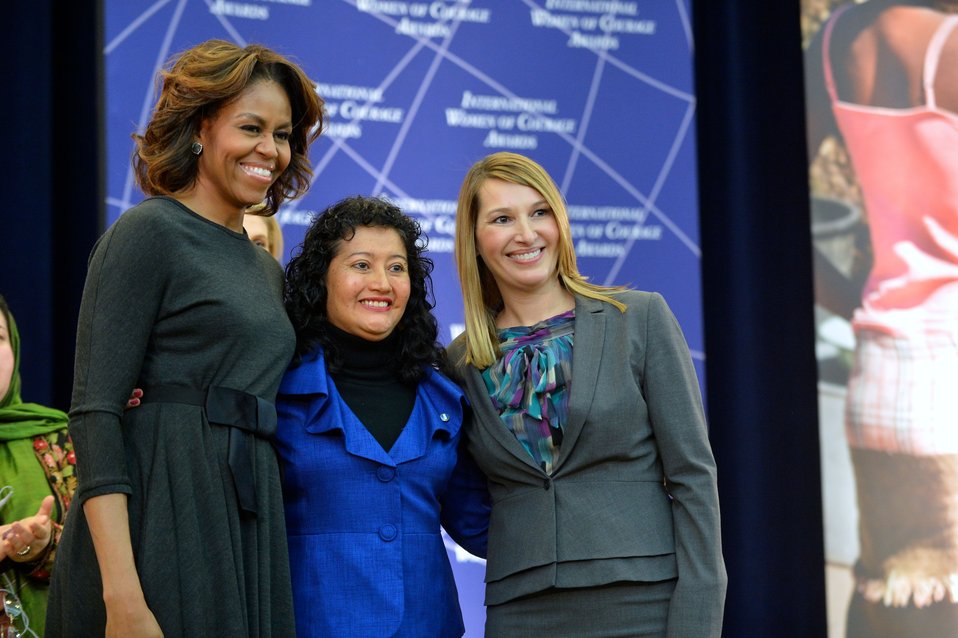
First Lady Michelle Obama and Deputy Secretary Higginbottom With 2014 IWOC Awardee Dr. Iris Yassmin Barrios Aguilar of Guatemala

First Lady Michelle Obama and Deputy Secretary Heather Higginbottom pose for a photo with 2014 International Women of Courage Awardee Dr. Iris Yassmin Barrios Aguilar, a Tribunal President of the High Risk Court in Guatemala, at the 2014 Secretary of State’s International Women of Courage Award Ceremony at the U.S. Department of State in Washington, D.C., on March 4, 2014.